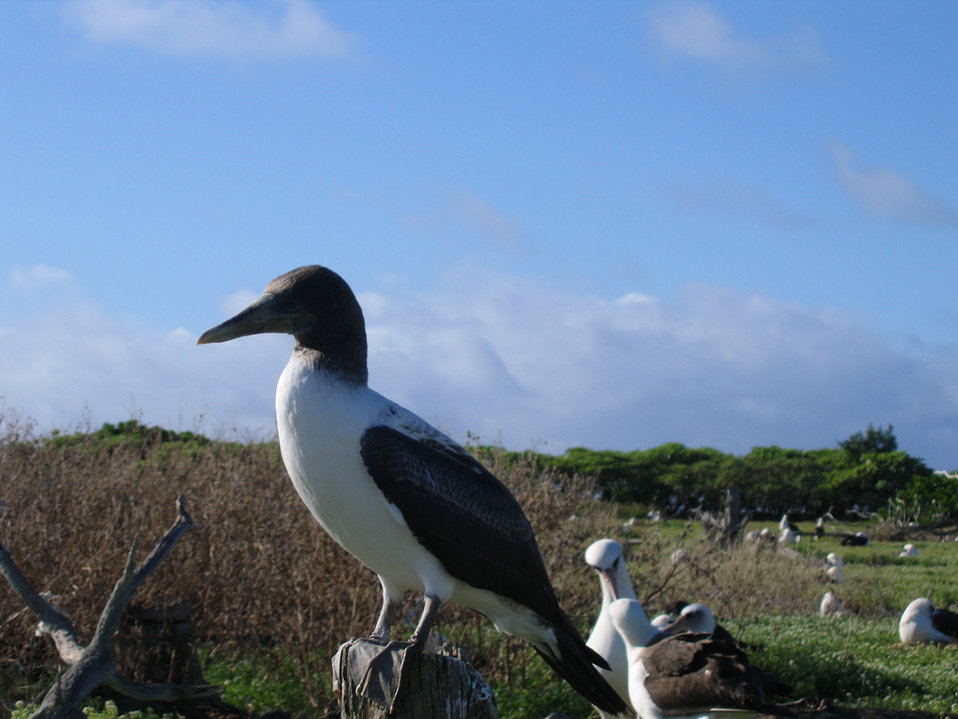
Booby

A booby perches on a tree limb in front of nesting grounds on Midway Atoll National Wildlife Refuge.